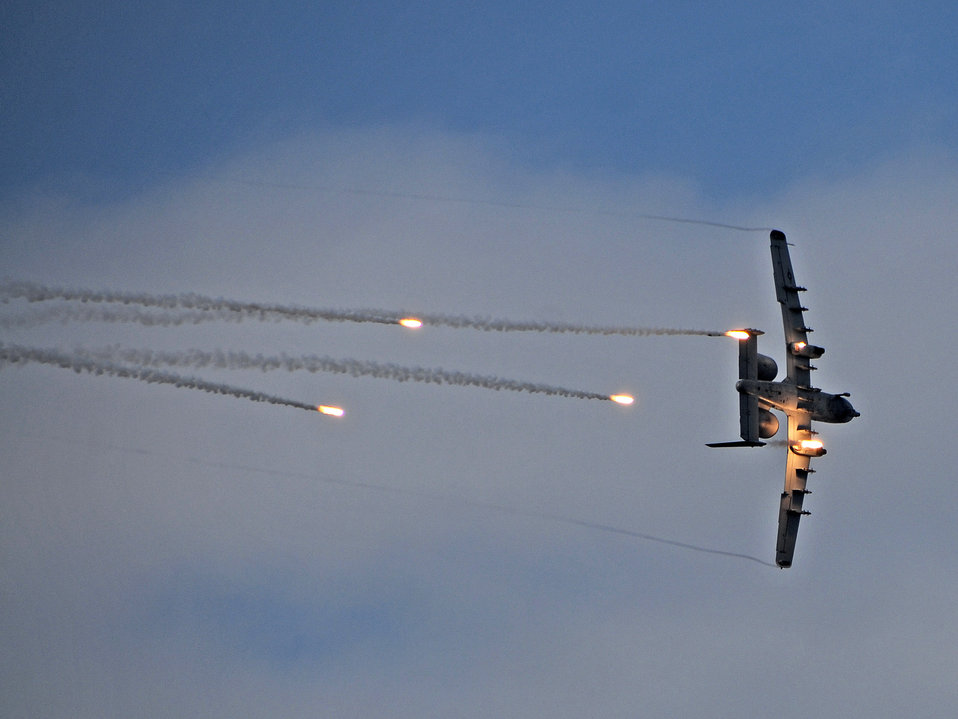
Putting on quite a show

An A-10 Thunderbolt II fires flares as part of a combat search and rescue scenario Oct. 7 during Airpower Day at Osan Air Base, South Korea. Air shows improve base morale and friendships with local citizens.